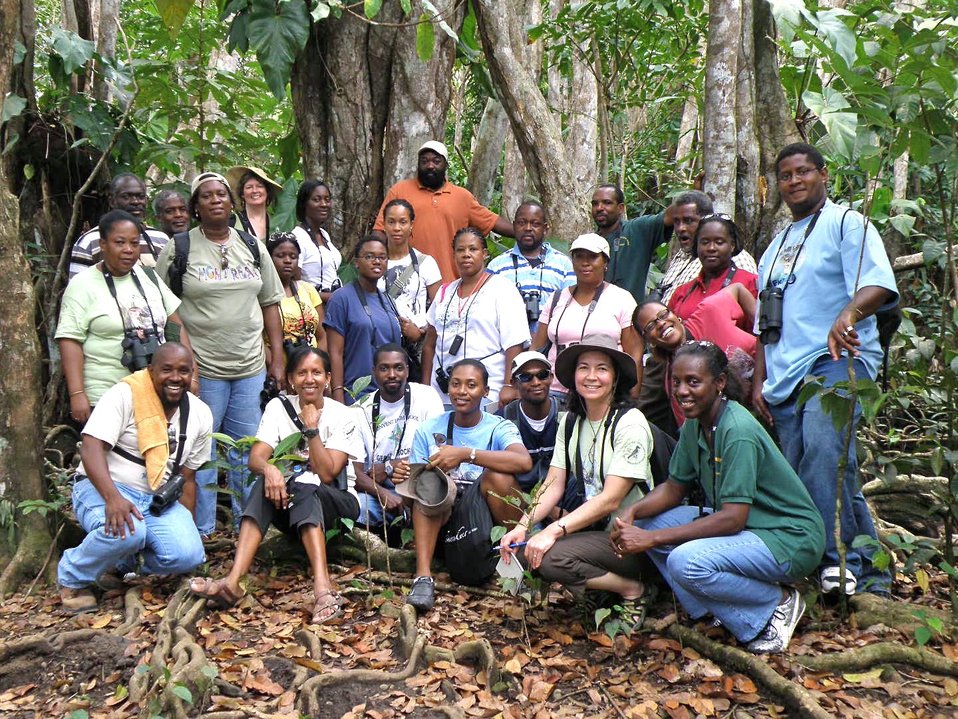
Group photo - secondary teachers in Pterocarpus Swamp

Lisa Sorenson (SCSCB) and a group of secondary teachers doing conservation education training in a pterocarpus swamp.